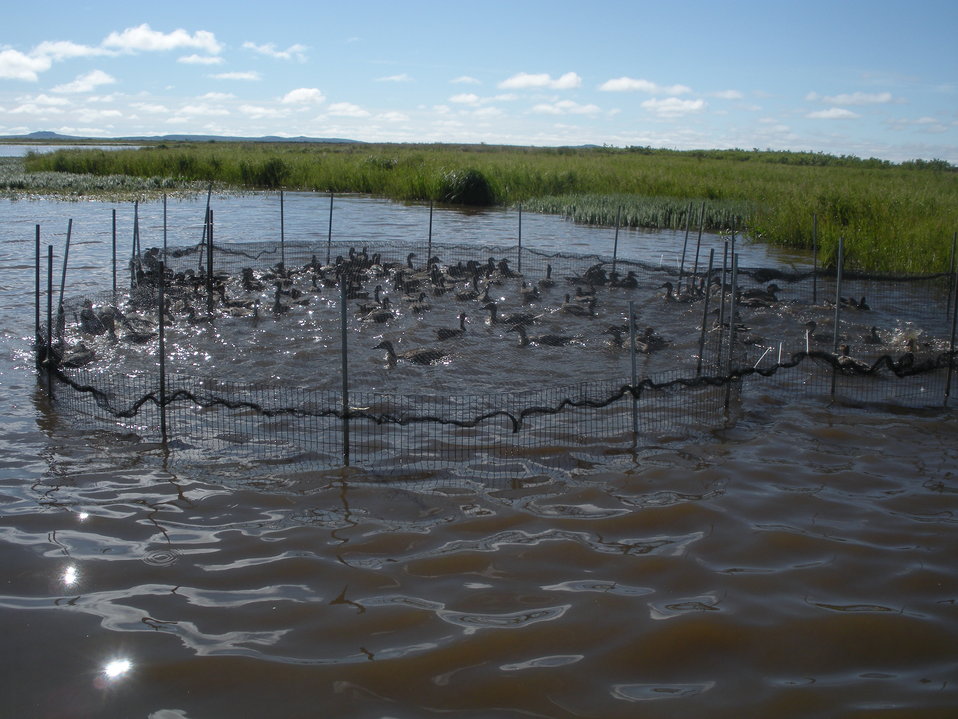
Swimming in trap

The swim-in trap allows the birds to swim freely witin the confines of the trap.

USFWS Yukon Delta NWR